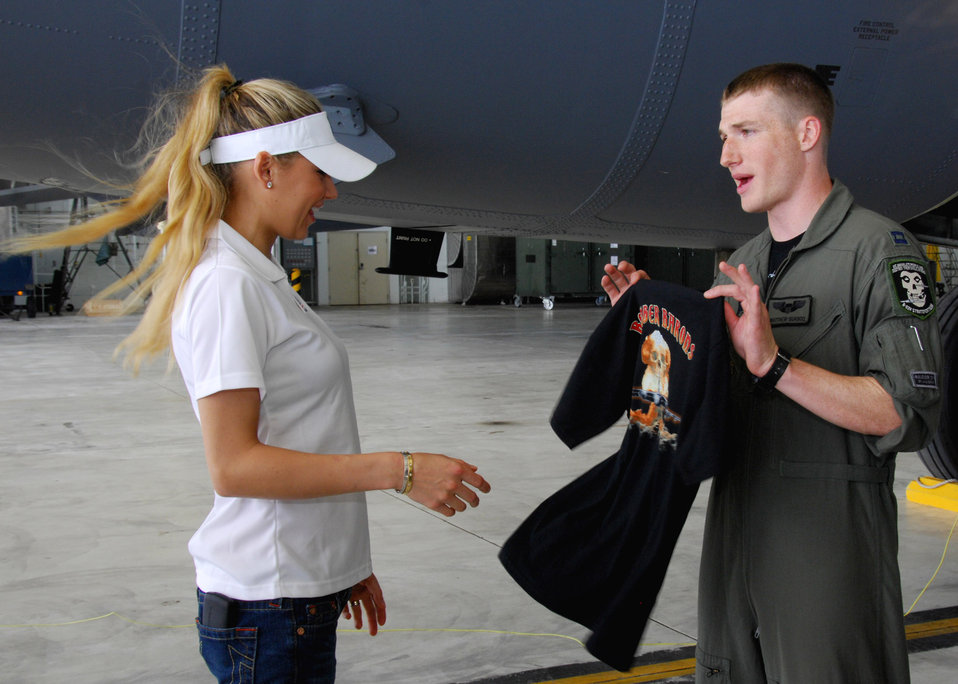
Anna Kournikova visits Andersen

Capt. Matthew Guasco presents Anna Kournikova a T-shirt during the tour of a B-52 Stratofortress Oct. 29 at Hangar 1 at Andersen Air Force Base, Guam. Her tour was sponsored by the United Service Organizations to boost morale of servicemembers on Guam. Captain Guasco is assigned to the 23rd Expeditionary Bomb Squadron from Minot AFB, N.D.